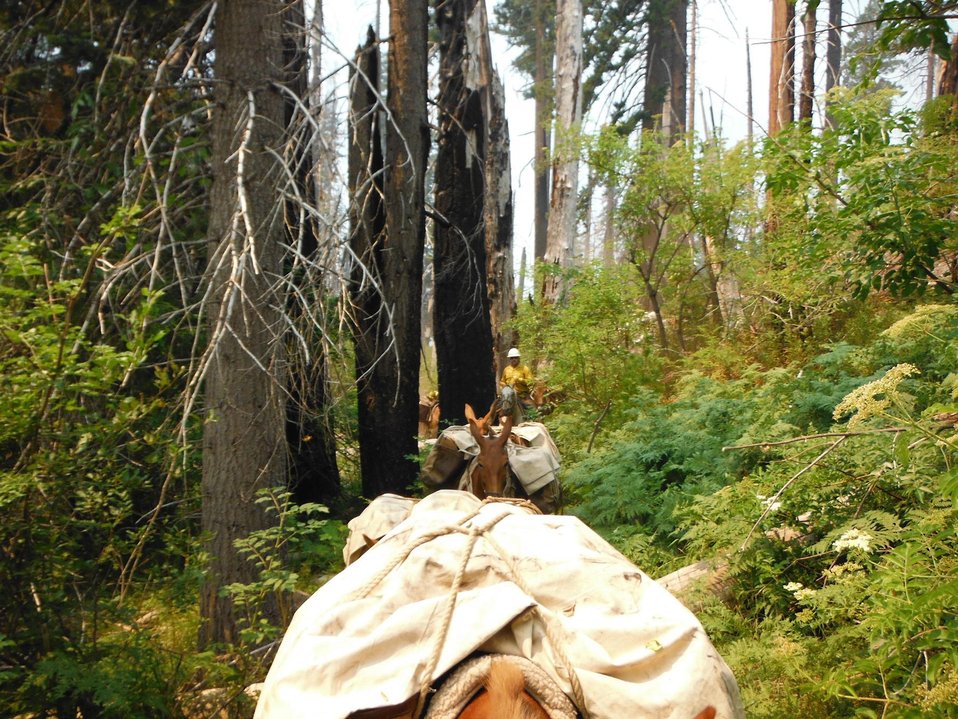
U.S. Forest Service (FS) pack mules carry firefighting equipment on trail to the Trinity Summit Guard Station to use against the Corral Complex Fire. The rugged terrains in some National Forests make the pack mule an invaluable asset in transporting heavy gear and equipment. The Corral Complex Fire in the Six Rivers National Forest near the Trinity Alps Wilderness area in California began on Aug. 10, 2013 by lightning and has consumed approximately 11,868 acres and is 18% contained.